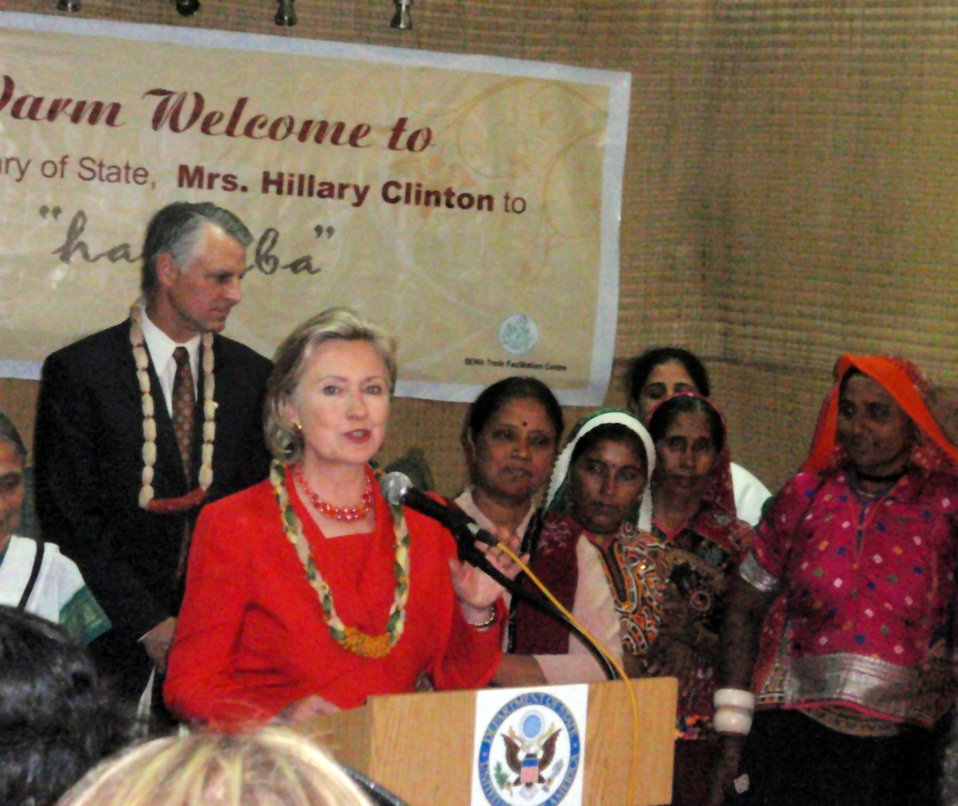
Behind the Scenes: SEWA Hansiba Store

Secretary Clinton speaks at SEWA (Self Employed Women's Association), flanked by women members of the organization in Mumbai, India July 18, 2009.